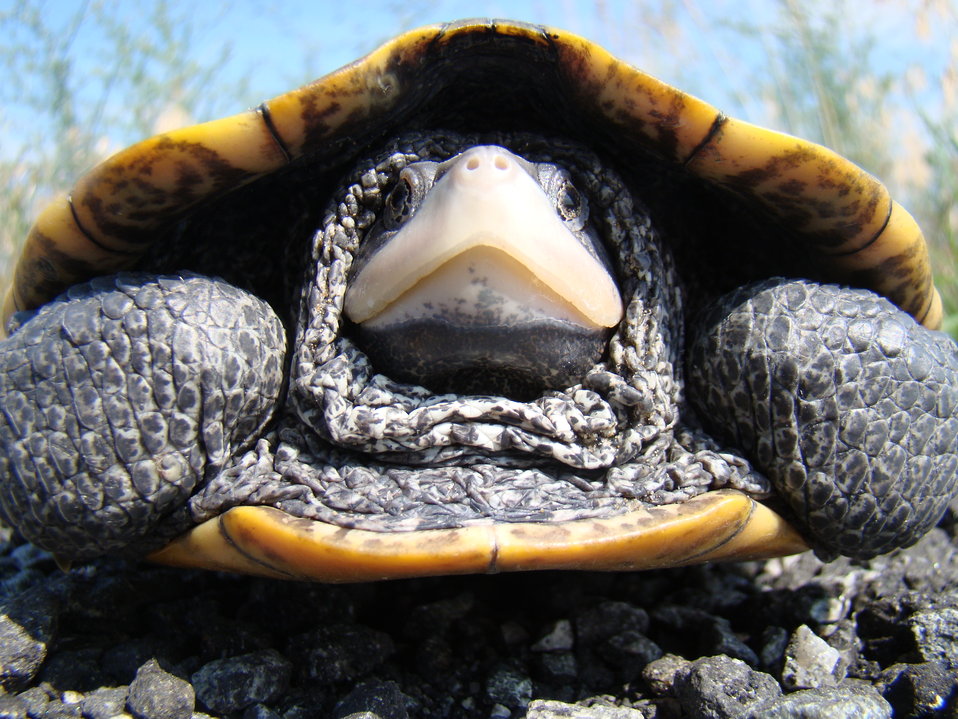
A Diamondback terrapin crawls through the Jamaica Bay Wildlife Refuge around John F. Kennedy (JFK) International Airport on May 23, 2012.The Diamondback terrapin is a type of turtle that prefers to live in brackish marshes and the Jamaica Bay Wildlife Refuge around JFK is a favored habitat for these reptiles. In the late spring, they crawl on to land to lay their eggs in the sandy soils near the airport, often crossing runways to do so. Terrapins on the runway pose a threat to aircraft using the runways. If a plane hits the terrapins, their carcass can attract scavengers like gulls, which may pose an even greater danger to airline safety.